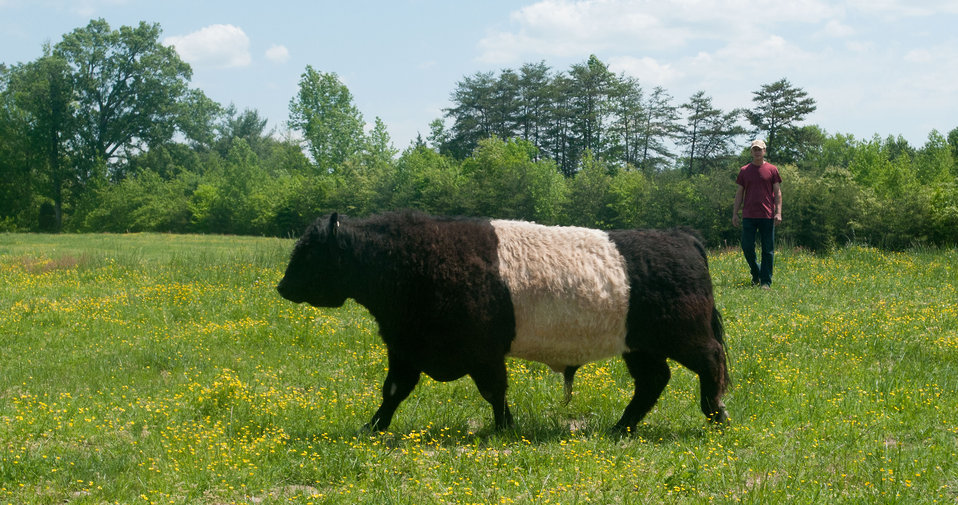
Cattle raised by Bruce Johnson at Dragonfly Farm are free-range, grass-fed, and very stress-free in Beaverdam, VA, on Friday, May 6, 2011, as they spend the day roaming one pasture or another and resting under shade trees. Sequential use of pastures allows the grass and land to re-grow and recover. Dragonfly and other farms produce meat products listed and ordered on Lulus Local Food website and distributed by Fall Line Farms food hub who offer a wide variety of household food staples and specialty items. Members pick their customized orders from an ever changing inventory of fruits, vegetables, meats, soaps, eggs, cheeses, flowers, honey, pastas, sauces, syrups, baked goods, mushrooms, flour and grains. Every Thursday, suppliers team up with other suppliers to deliver customized orders to, one of several pick-up points, designated by the customer in or around the Richmond area.